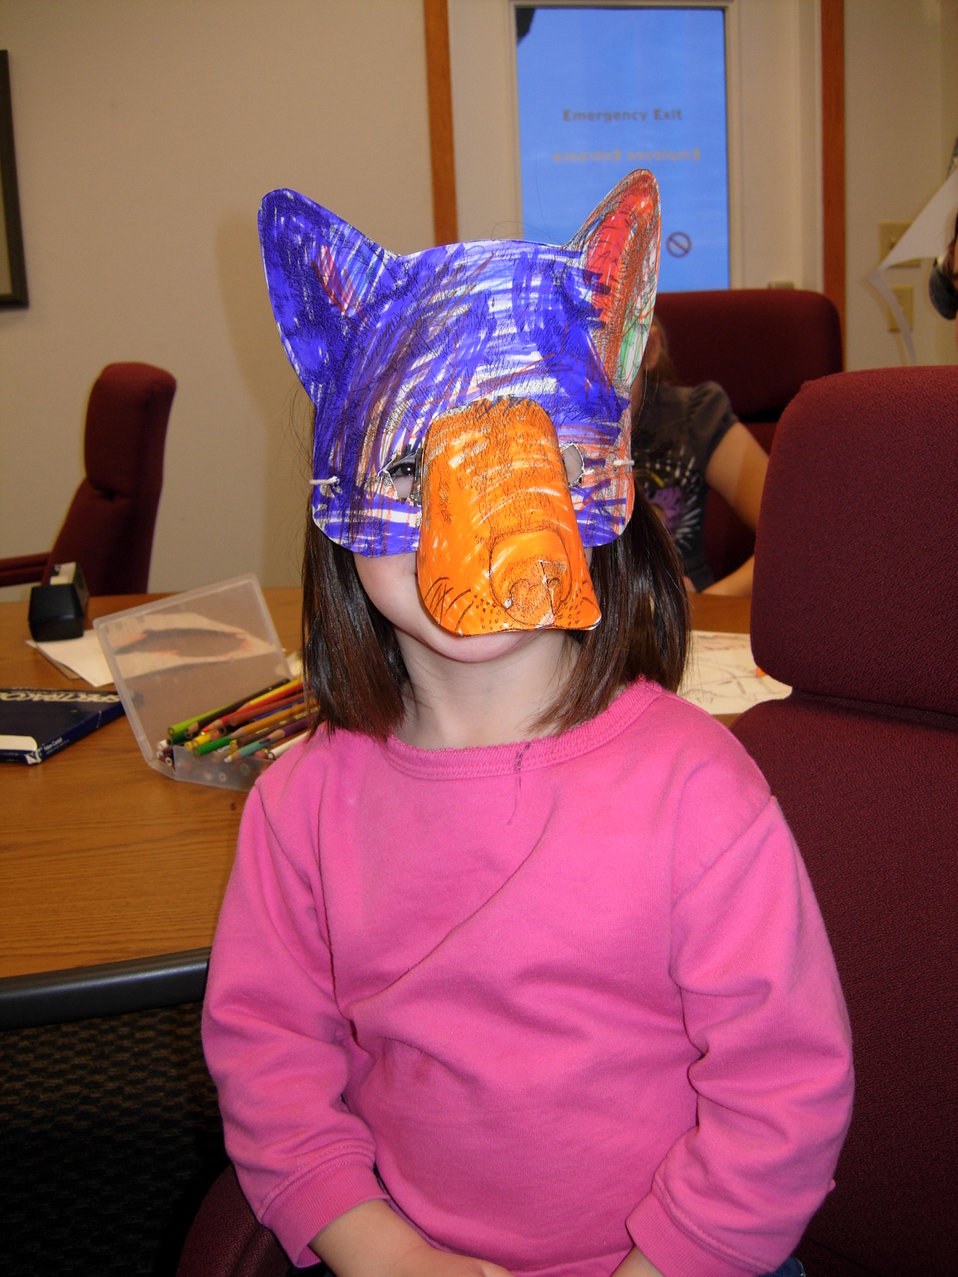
Coyote Mask

Showing off her coyote 'creature' mask at Des Lacs Refuge 75th birthday celebration.